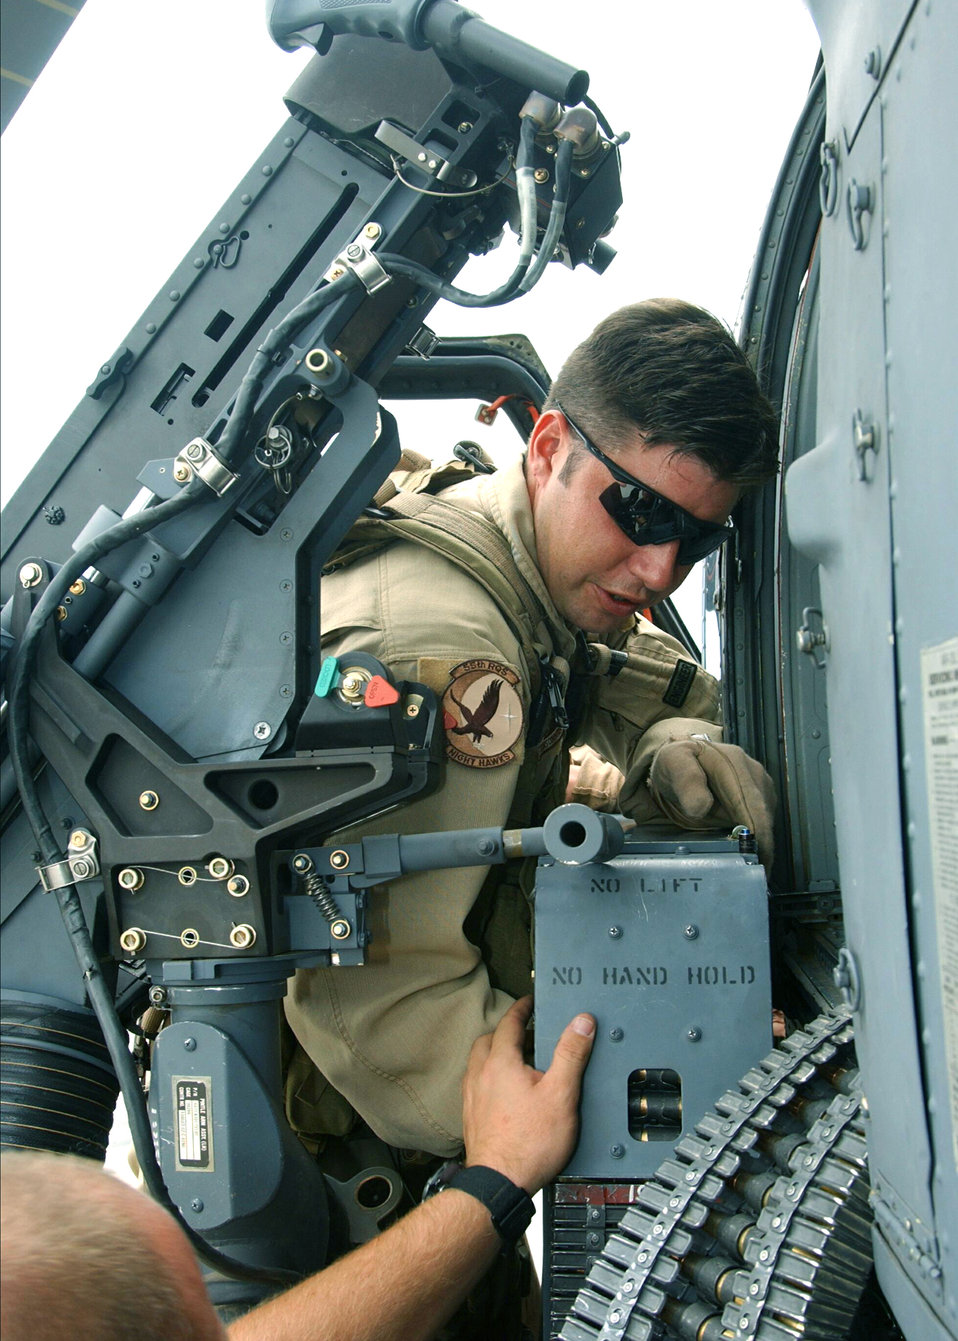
In a fix

DAVIS-MONTHAN AIR FORCE BASE, Ariz. -- Staff Sgt. Garry Gray calibrates the gun on an HH-60 Pave Hawk helicopter here Aug. 16 while preparing for a training mission. Sergeant Gray is an aerial gunner with the 55th Rescue Squadron.